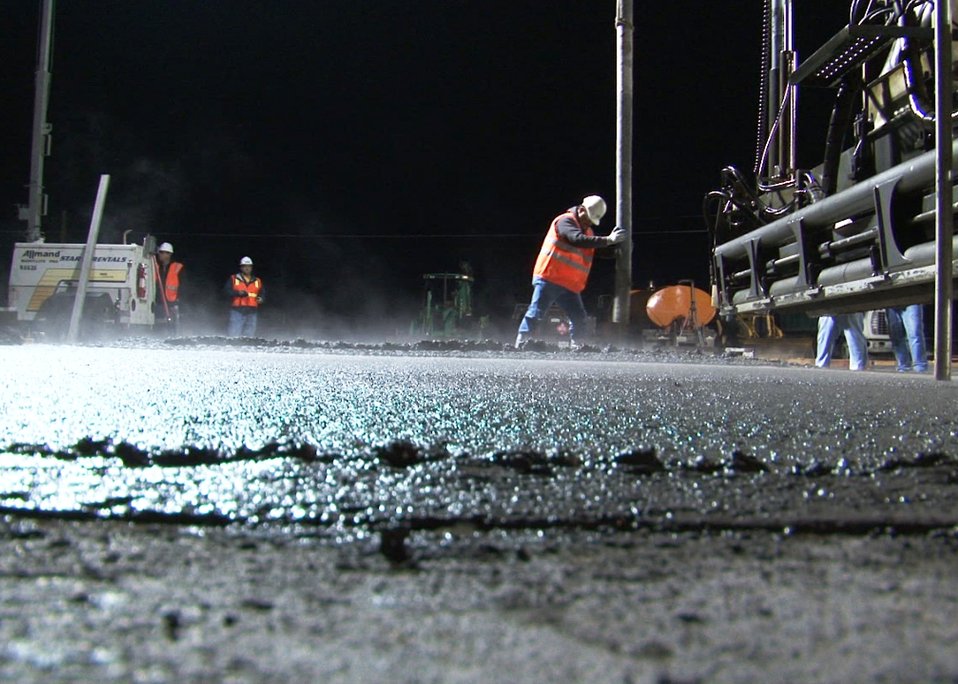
DX GW Treatment 1

New hires at Hanford site in Washington.